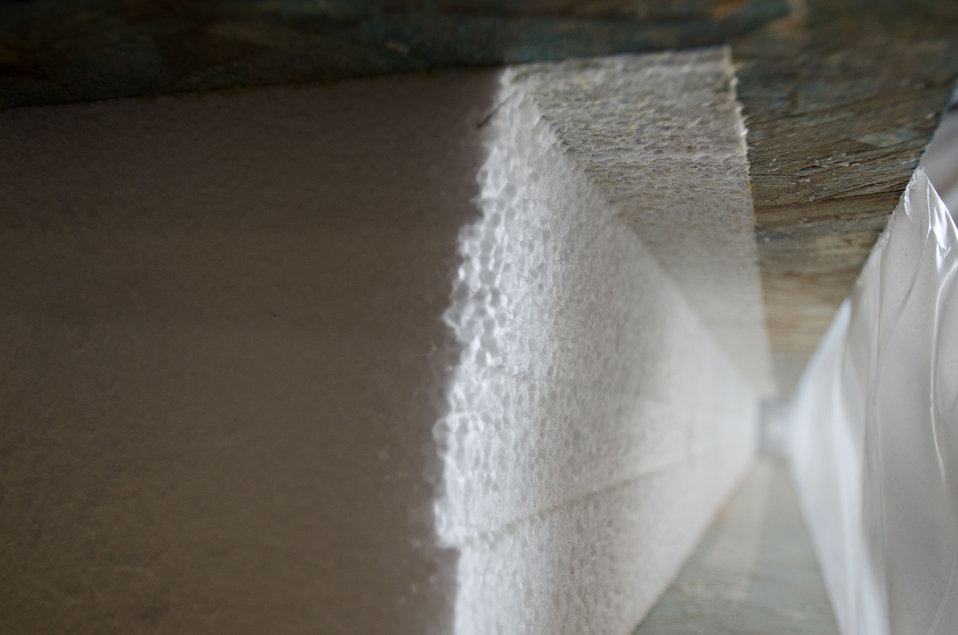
Extra thick foam filled floors and exterior walls adding to the climate sealing and energy efficiency of a new type of manufactured home from Stardust Industries on Wednesday, July 13, 2011 in Monticello, KY. They are helping retool and redirect Kentucky’s houseboat manufacturing industry – which has been decimated because of the struggling economy – by using its facilities and manpower to create low-cost housing that is energy efficient. Rural Development obligated $499,000 in Rural Business Enterprise Grant funds to support this unique endeavor. Up until a few years ago, there were several successful houseboat manufacturers in the four-county area surrounding the city of Somerset. Most have now ceased operation or drastically reduced output, which has led to dramatic, long-term job loss. These new energy efficient homes will be constructed in redesigned, refitted houseboat factories using local workers that have been retrained.